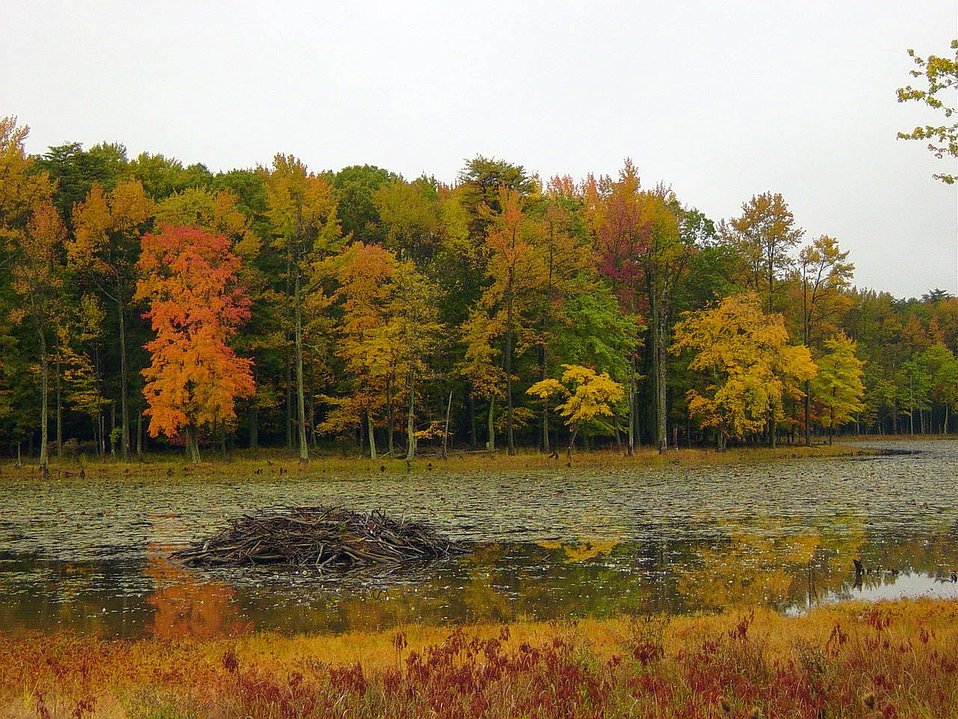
Patuxent Research Refuge, MD

Lake Reddington beaver lodge.